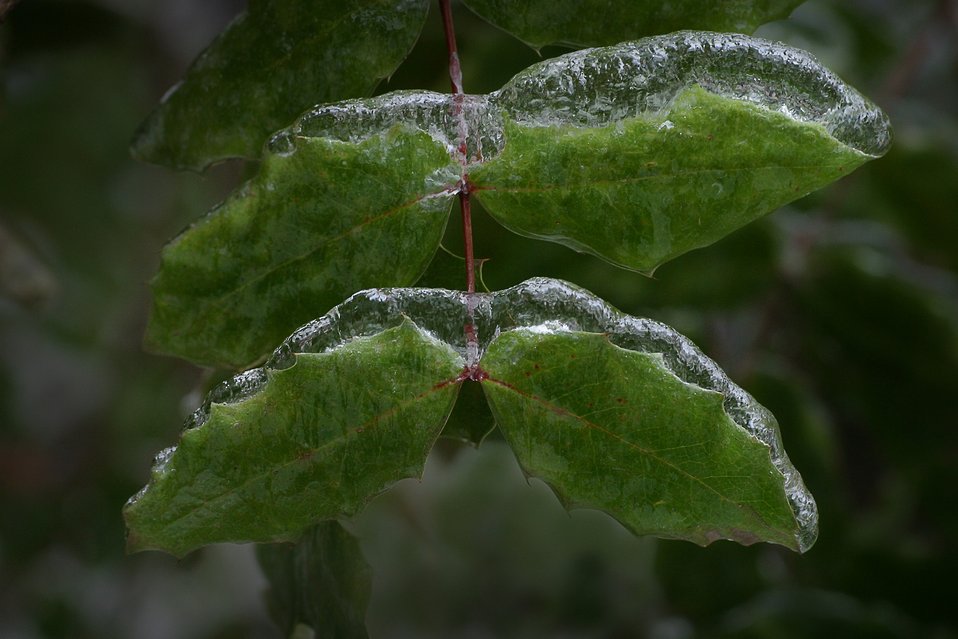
Ice on Oregon Grape leaves.